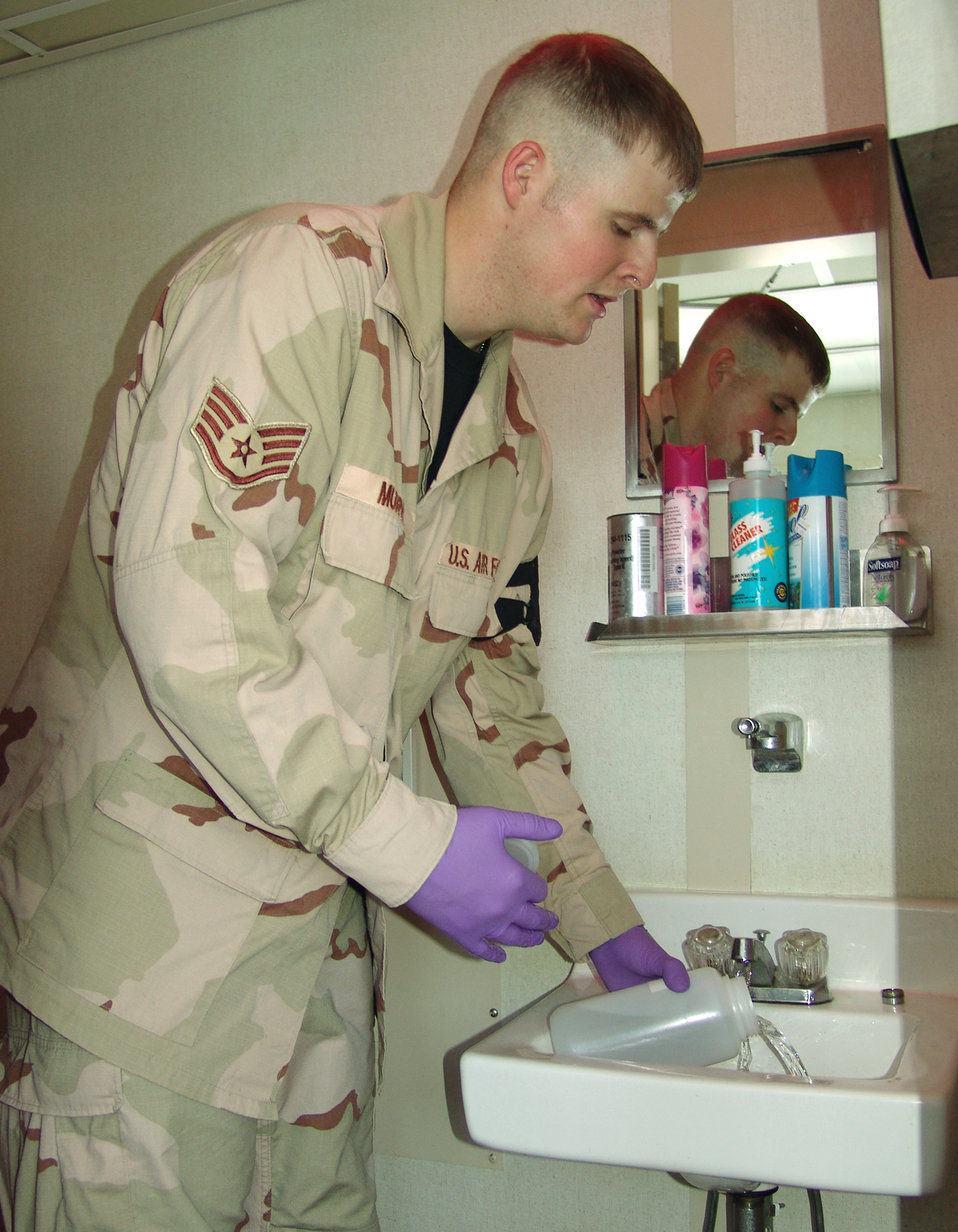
Testing it out

SOUTHWEST ASIA -- Staff Sgt. Justin Murphy pours out a water sample at a latrine aboard an Army ship. The Airmen who make up the 2nd Preventive Medicine Team Air Force are responsible for the healthy living environment of 60,000 Soldiers at eight different camps.